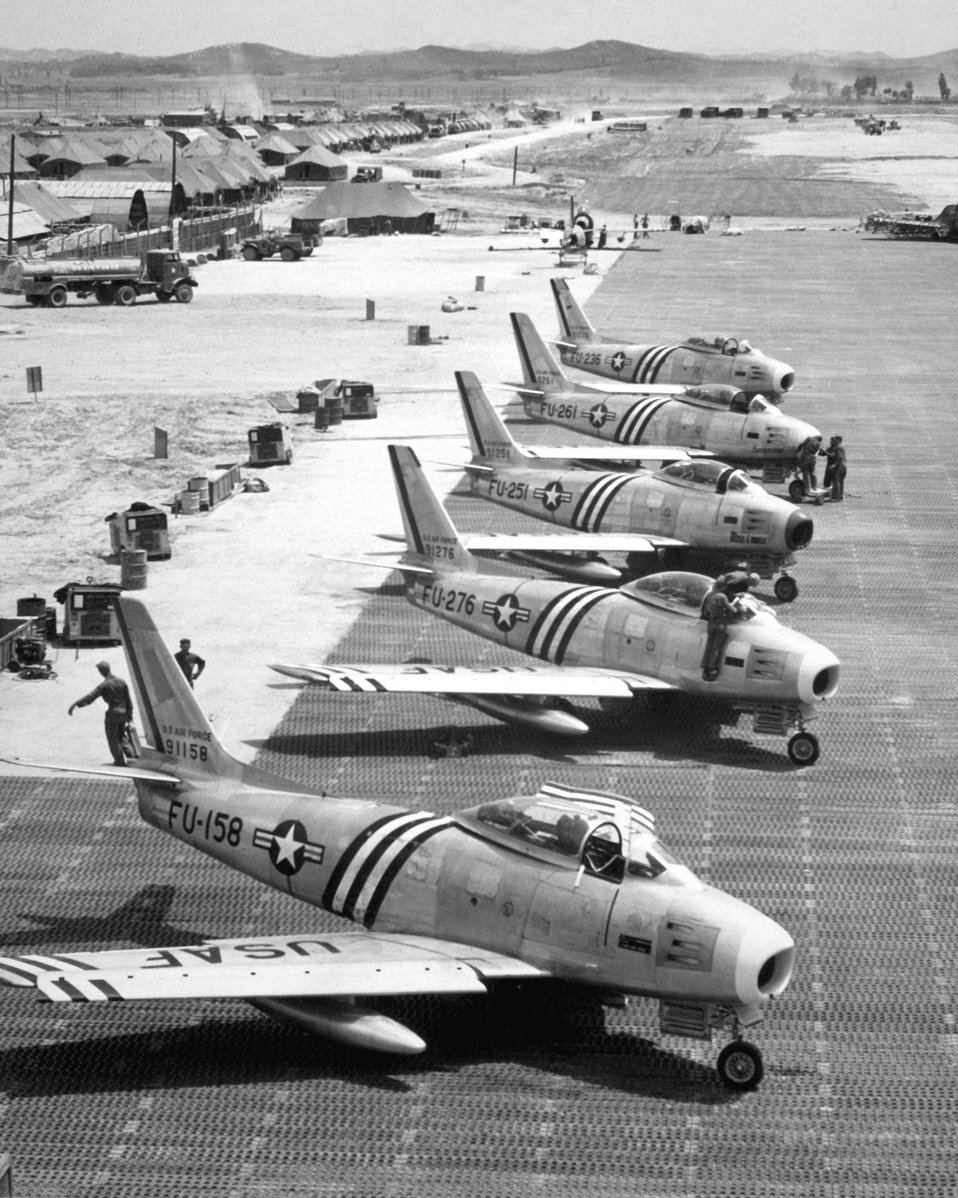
F-86 airplanes on the flight line

1950's -- F-86 airplanes on the flight line getting ready for combat. June 1951.